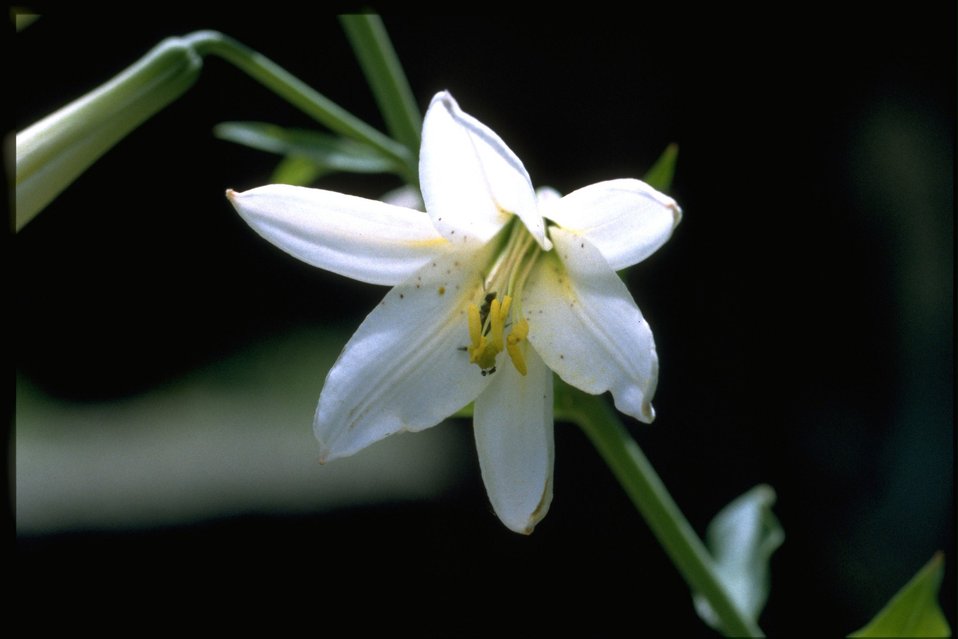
Closeup shot of Lilium washingtonianum.